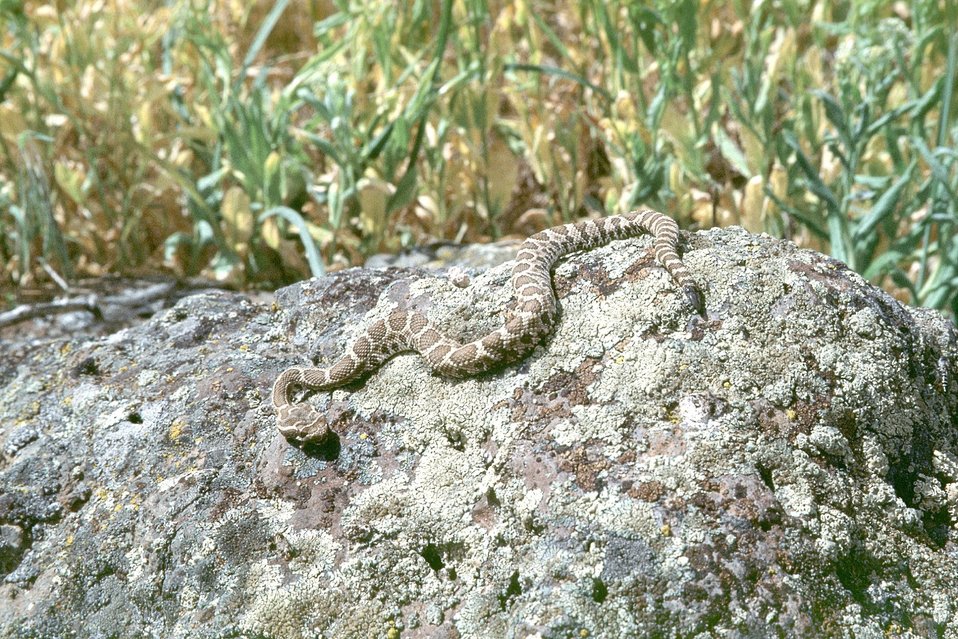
Rattlesnake at AML Poorman, Vale District, Oregon.